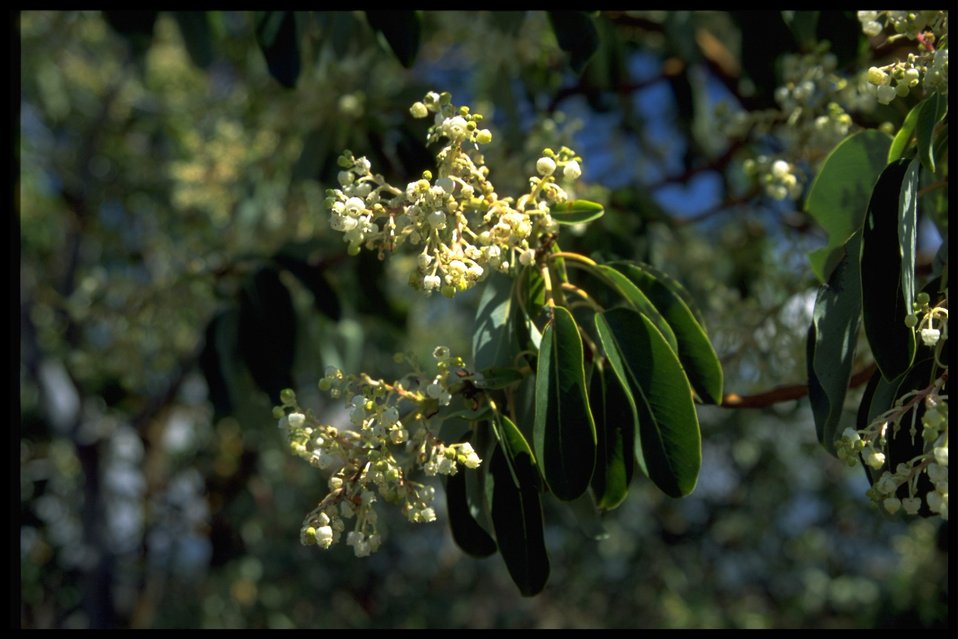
Medium shot of Madrone, Arbutus menziesii.